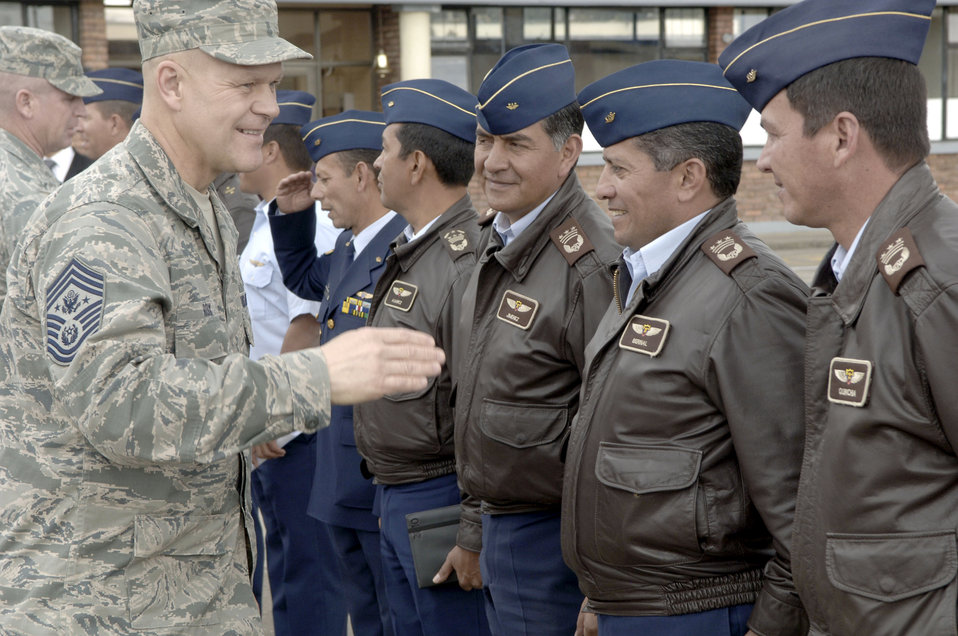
Chief Roy

Chief Master Sgt. of the Air Force James A. Roy greets Colombian air force staff members Feb. 1, 2011, in Bogota.